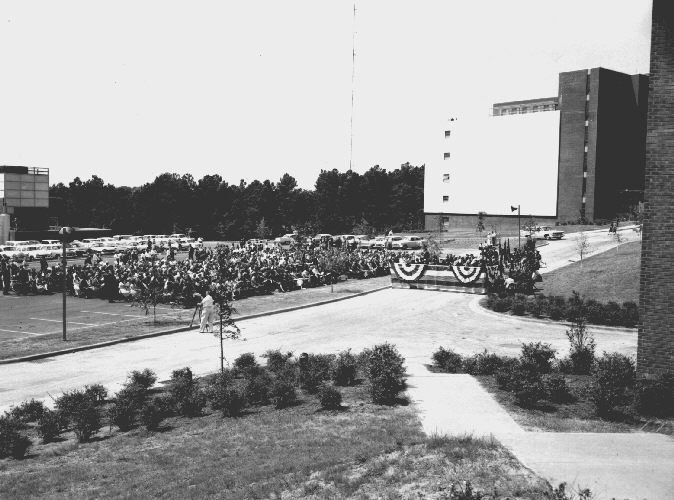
CDC Dedication Ceremony.